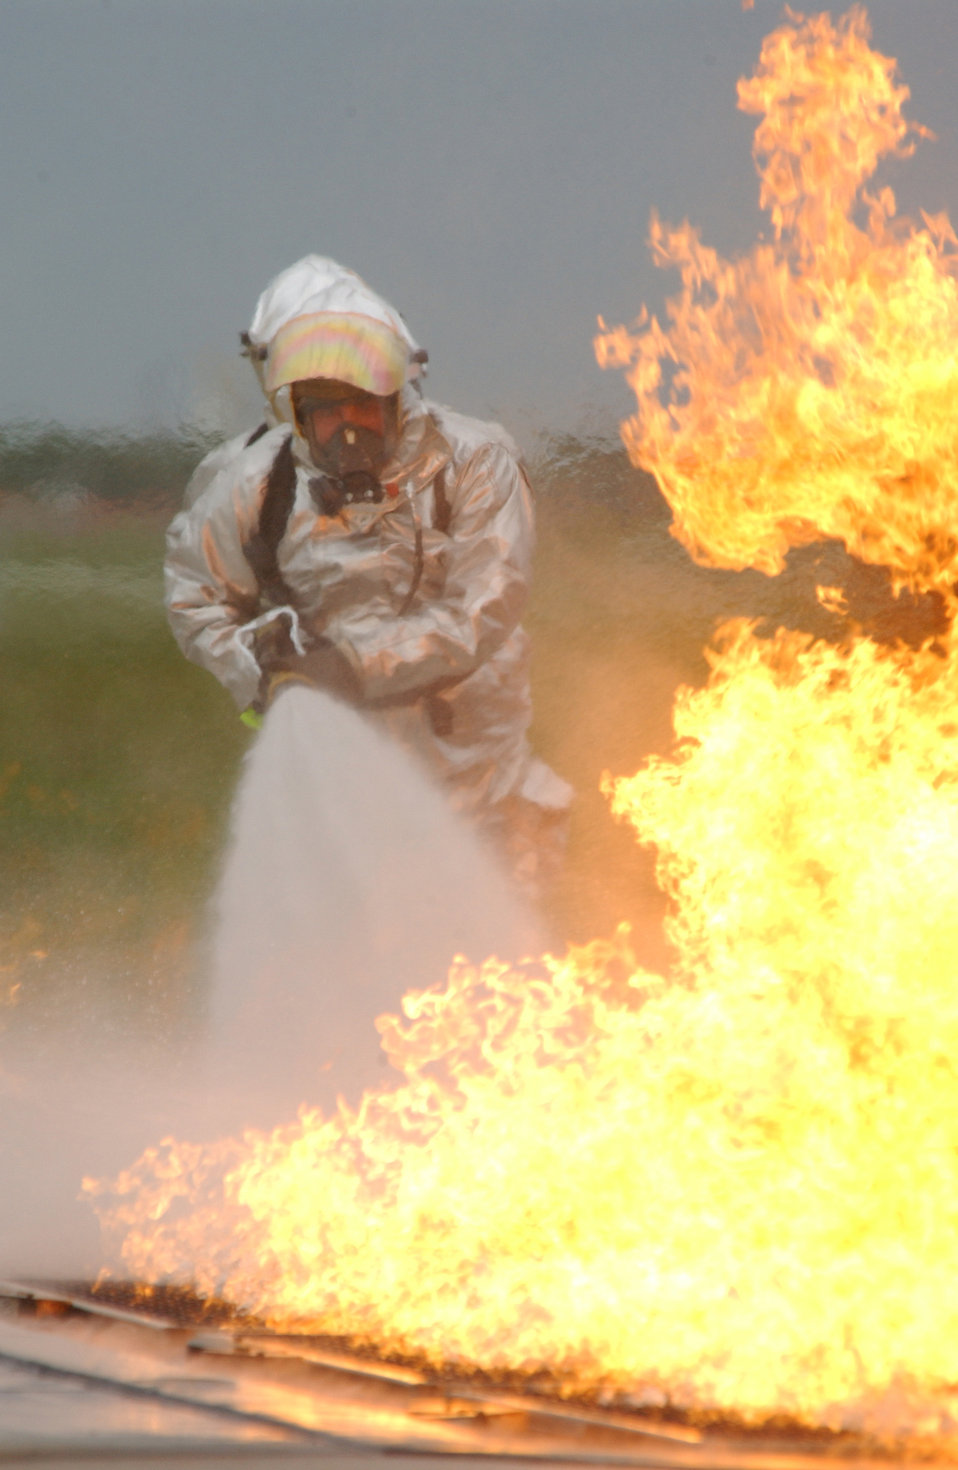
Light my fire

FARGO, N.D. -- A firefighter from the 185th Civil Engineer Squadron sprays water on a mock aircraft burn grate at a training site June 15. The grate fire simulates a burning fuel spill near an aircraft crash site. The mock aircraft burn area is used to provide annually required training for fire fighters from all over the United States. The firefighter is a member of the Iowa Air National Guard.